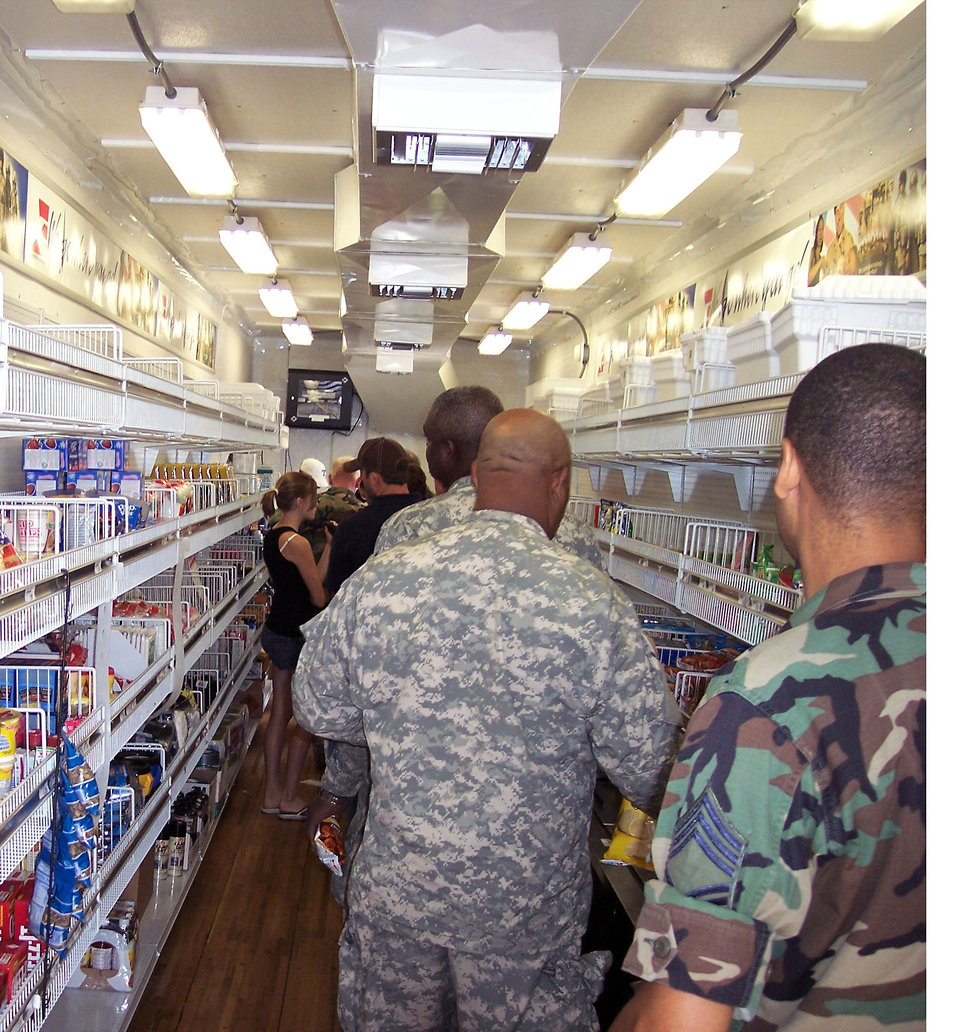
AAFES supports troops bringing relief to Ike victims

Shoppers wait to check out at the register in the Army & Air Force Exchange Service Mobile Field Exchange at Ellington Field, Texas, Sept. 15. AAFES is providing support to the Airmen, Soldiers, Sailors, Marines, Coast Guard and the Texas State Guard while they help the citizens within the Houston area after the wake of Hurricane Ike. The MFE provides snacks, drinks, toiletries and ice to authorized customers and will stay at Ellington Field until the installation?s power comes back online.